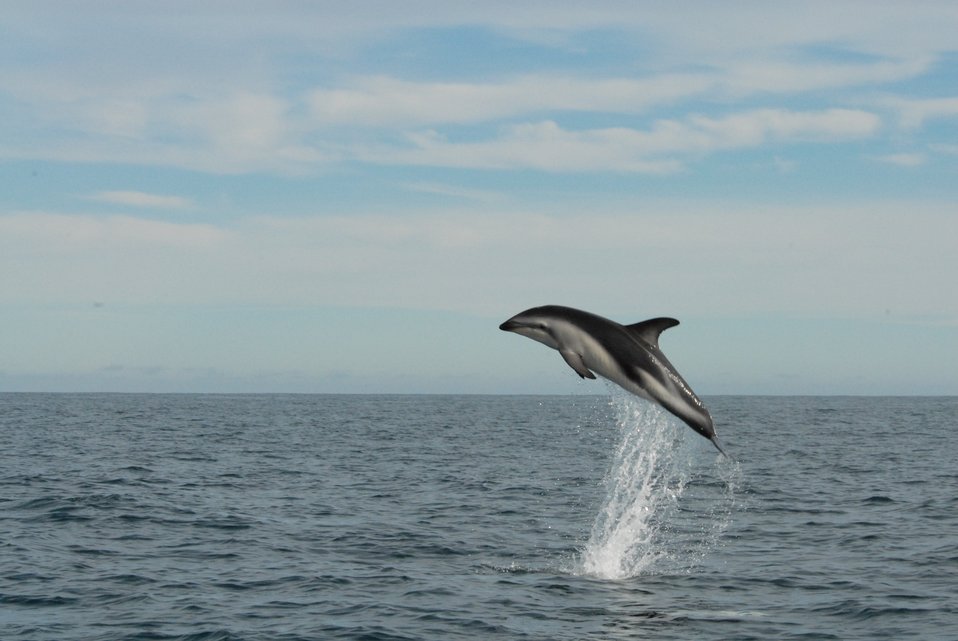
Dusky dolphin (Lagenorhynchus obscurus)